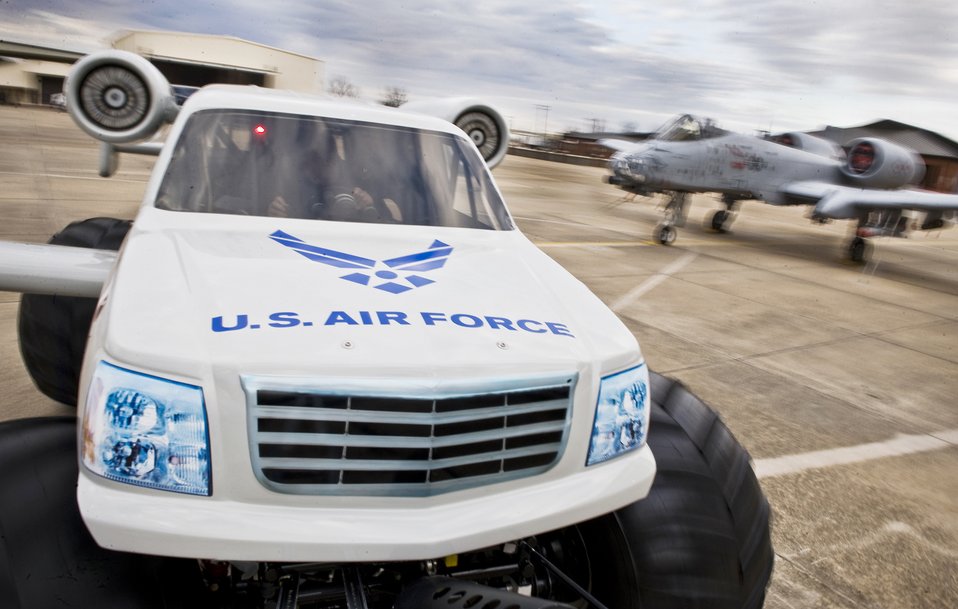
A-10 Monster meet A-10 Thunderbolt

Robbe Cartwright, lead transporter for the U.S. Air Force A-10 monster truck, drives the truck near an A-10C Thunderbolt II from the Arkansas Air National Guard's 188th Fighter Wing at Ebbing Air National Guard Base Jan. 27, 2010.